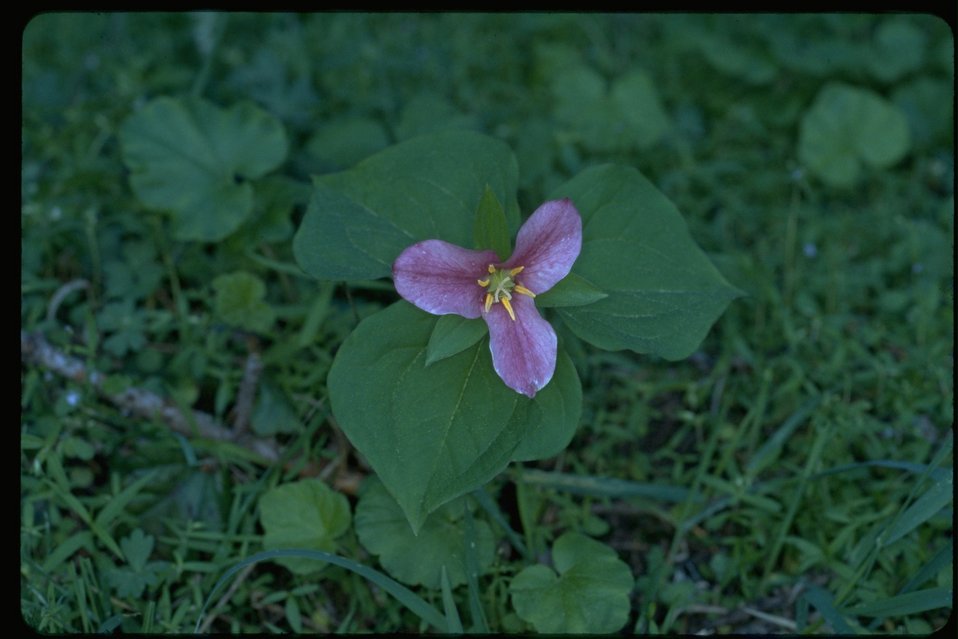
Long shot of purple Trillium.